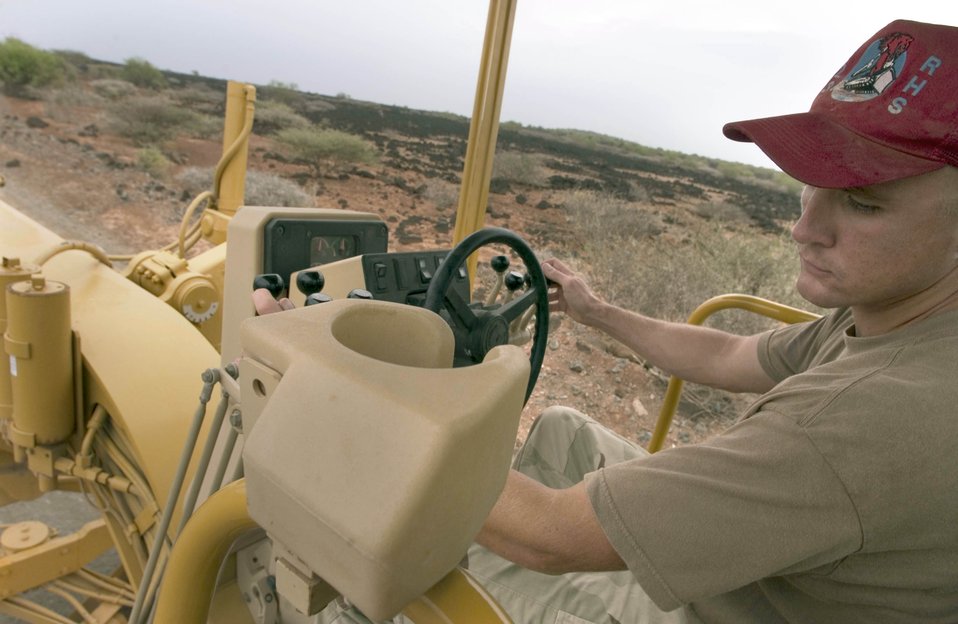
Building relationships one mile at a time

NEAR DJIBOUTI, Djibouti -- Staff Sgt. Matthew Hill drives a grader to level the Hol Hol road which connects the town of Hol Hol with Djibouti City. Sergeant Hill is a heavy equipment operator with the 823rd Expeditionary Red Horse Squadron here at Camp Lemonier. The squadron is assisting the Combined Joined Task Force -- Horn of Africa to establish a secure environment and enable regional stability.